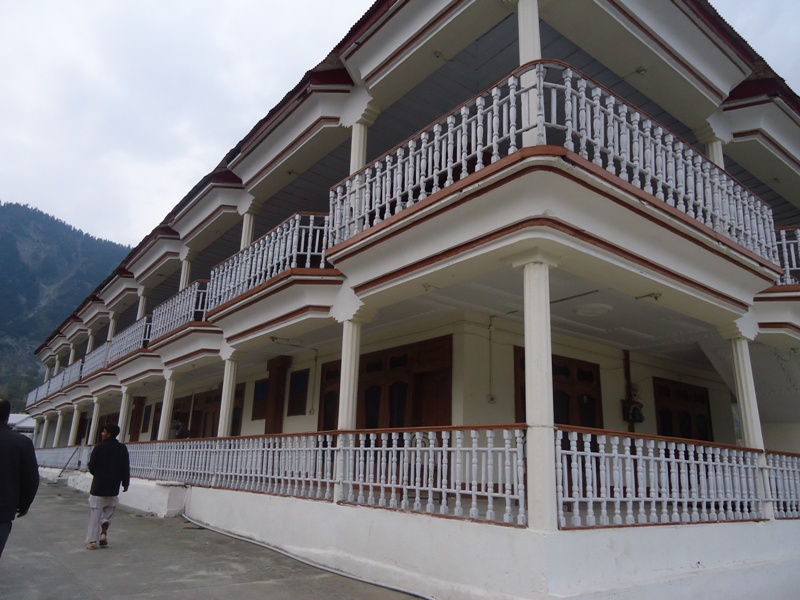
USAID helps rehabilitate hotels and fish farms in battered Swat Valley - 4

USAID’s support to hotel owners in Swat enabled partner hotels to reconstruct their facilities and as many as 149 partner hotels to resume regular operations and welcome tourists in the summer 2011 tourist season.